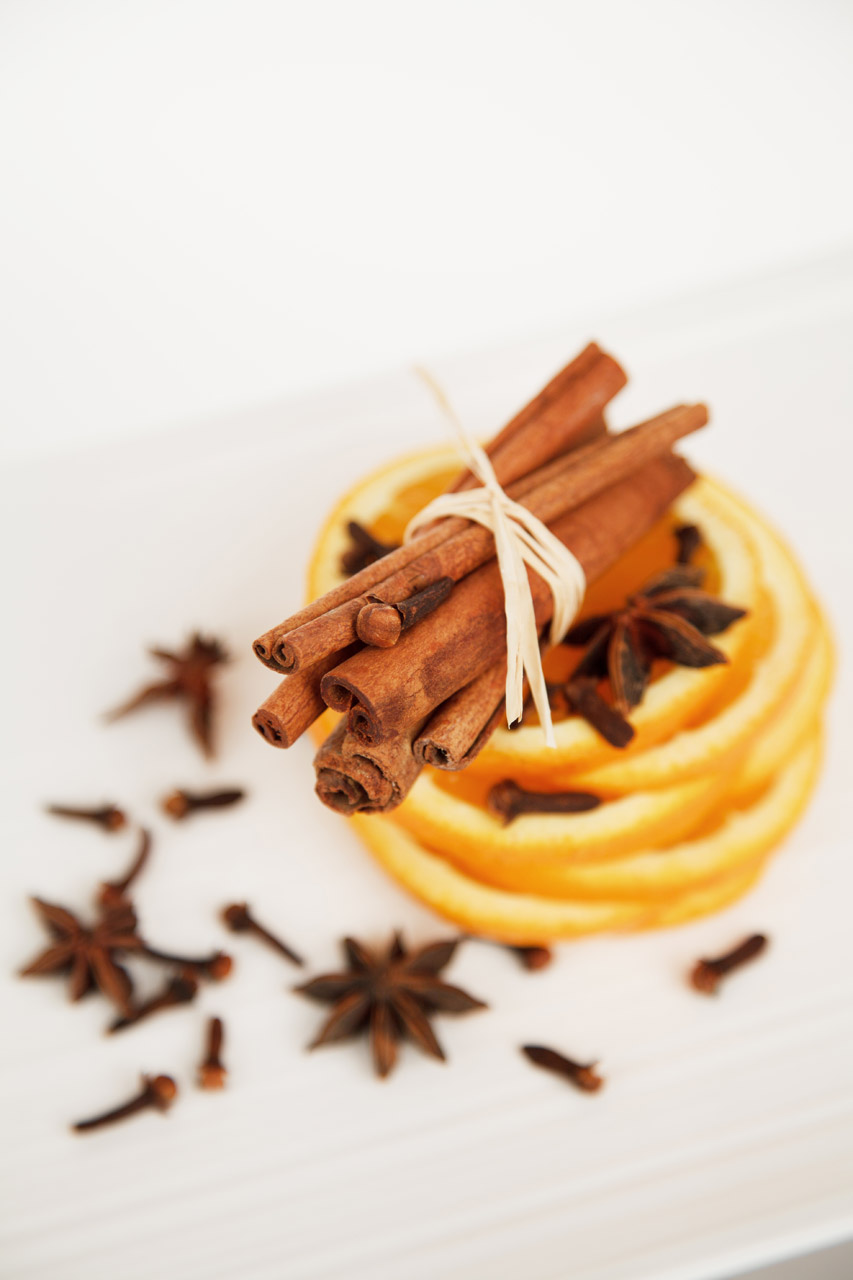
Cinnamon clove and orange on a plate on white background.